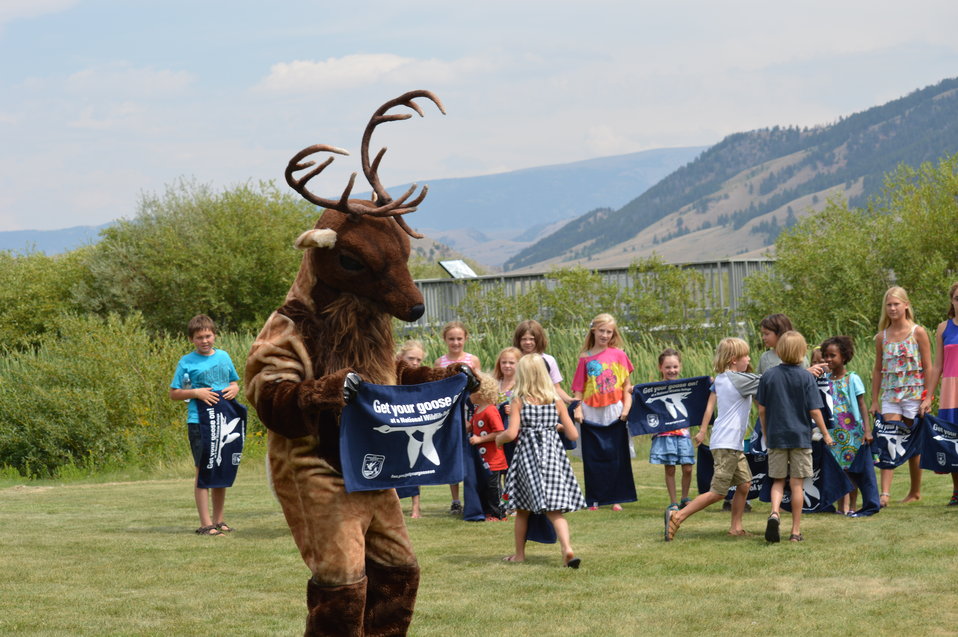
Get Your Goose On! - National Elk Refuge Style

On August 10, 2012 the U.S. Fish and Wildlife Service and Partners celebrated the 100 year anniversary of the establishment of the National Elk Refuge. In these photos, young attendees, along with Puddles the Blue Goose and the National Elk Refuge's mascot, showed us how to Get Your Goose On! with style.